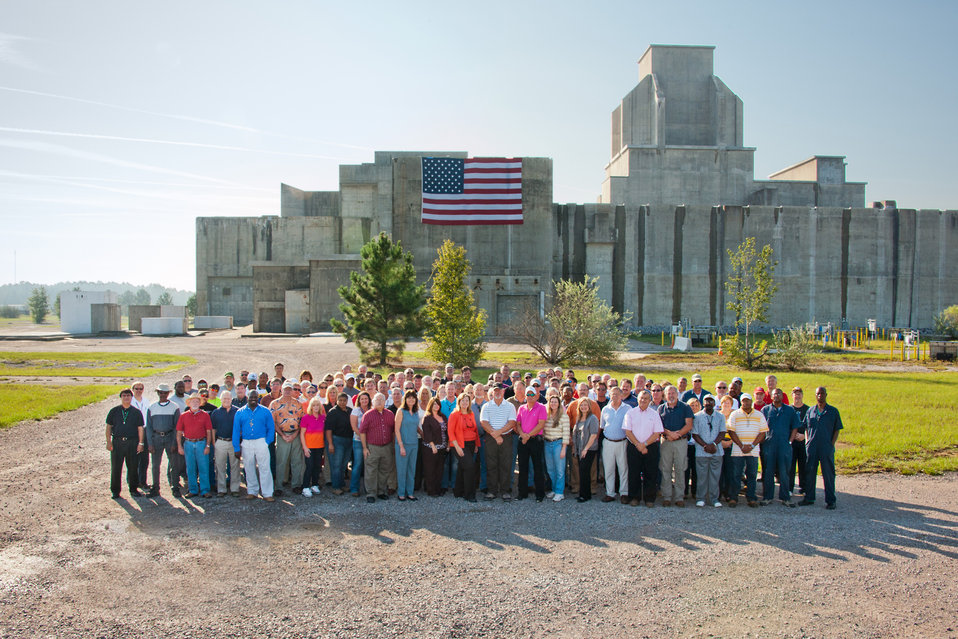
P Reactor - Recovery Act achievement

The SRS Recovery Act Program workforce stands in front of the P Reactor, which was deactivated and decommissioned under the Recovery Act.